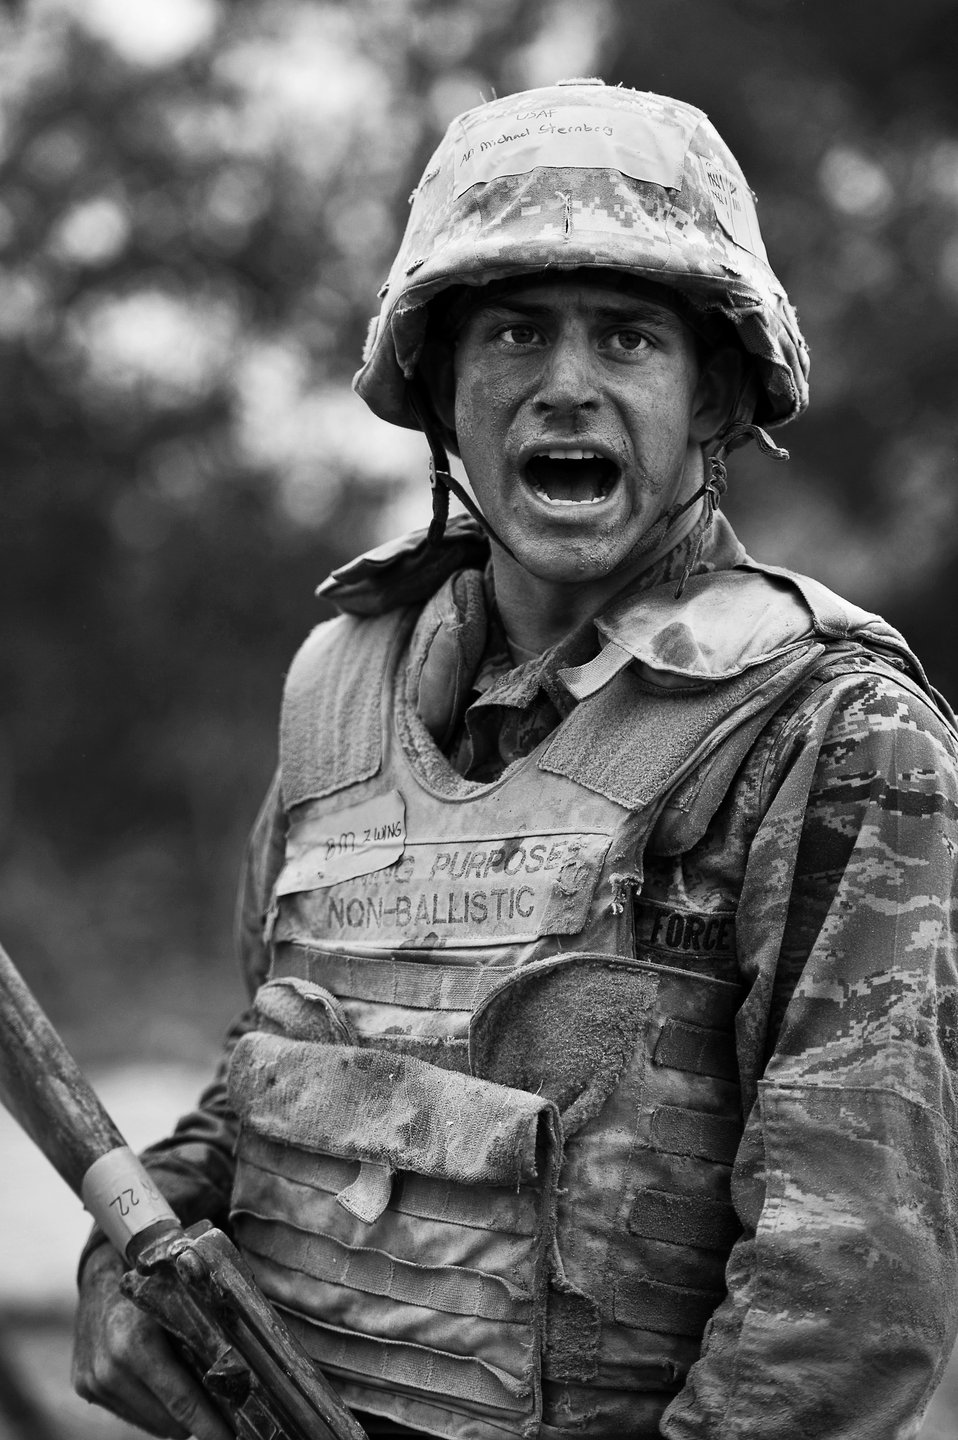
BEAST

Basic trainees go through their sixth week of Air Force basic military training at the Basic Expeditionary Airman Skills Training on May 25, 2011, at Lackland Air Force Base, Texas.